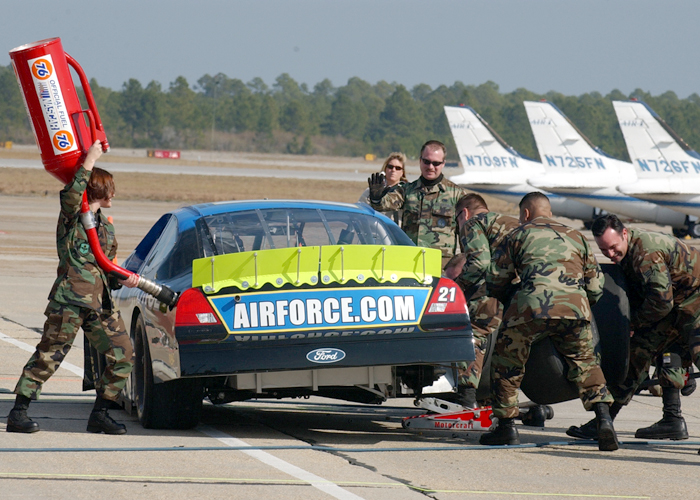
It's the pits!

TYNDALL AIR FORCE BASE, Fla. -- Nine teams here participated in the Air Force Pit Stop competition Jan. 12. Teams vied to see who could change two tires the fastest on the Air Force/Motorcraft Wood Brothers Racing Ford Taurus. A team representing Tyndall's 1st Aircraft Maintenance Unit won with a time of 19.7 seconds. They received the hood from the Motorcraft/Air Force race car that competed at Homestead International Speedway in Homestead, Fla.